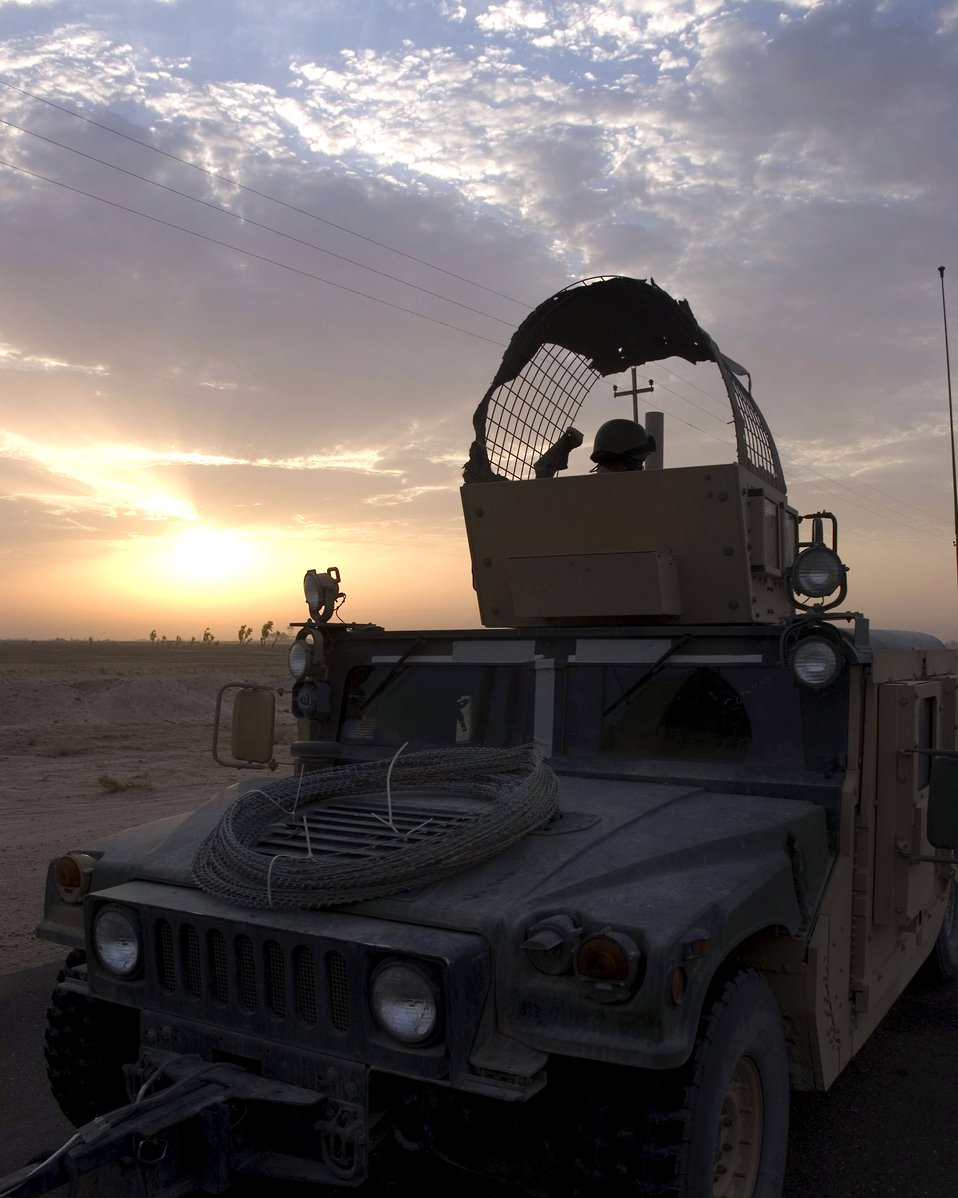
Airmen help keep Iraqi supply routes open

An 887th Expeditionary Security Forces Squadron Humvee slowly rolls forward while on patrol in August in southern Iraq. Members of the 887th ESFS patrol convoy routes to keep them clear of improvised explosive devices.